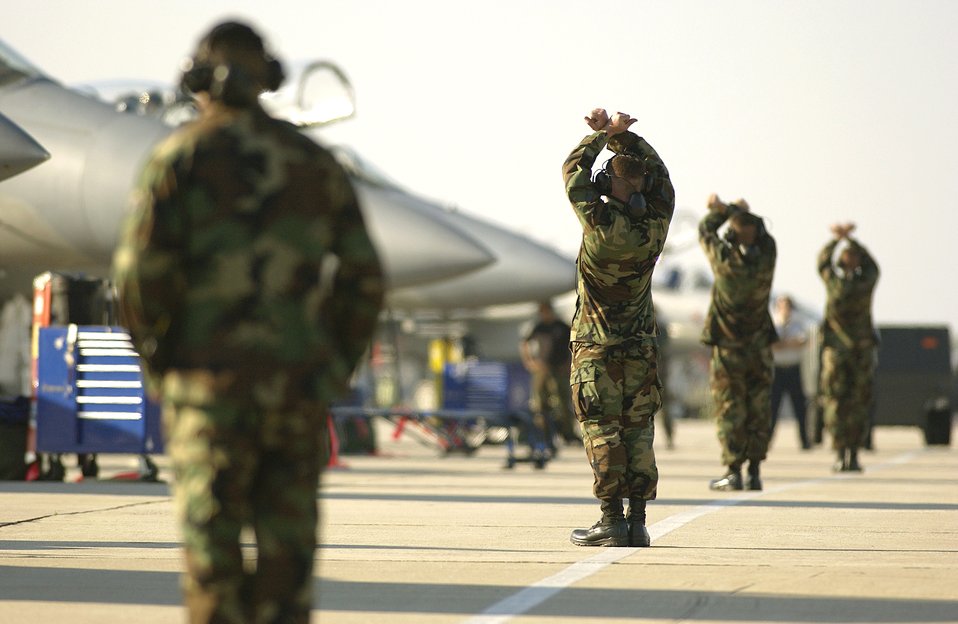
Maintainers mind William Tell details

TYNDALL AIR FORCE BASE, Fla. -- Several crew chiefs from the 19th Fighter Squadron at Elmendorf Air Force Base, Alaska, marshal F-15 Eagles during William Tell 2004 here. This is the 50th anniversary of the William Tell competition that tests an aircrew's ability to perform under combat conditions.